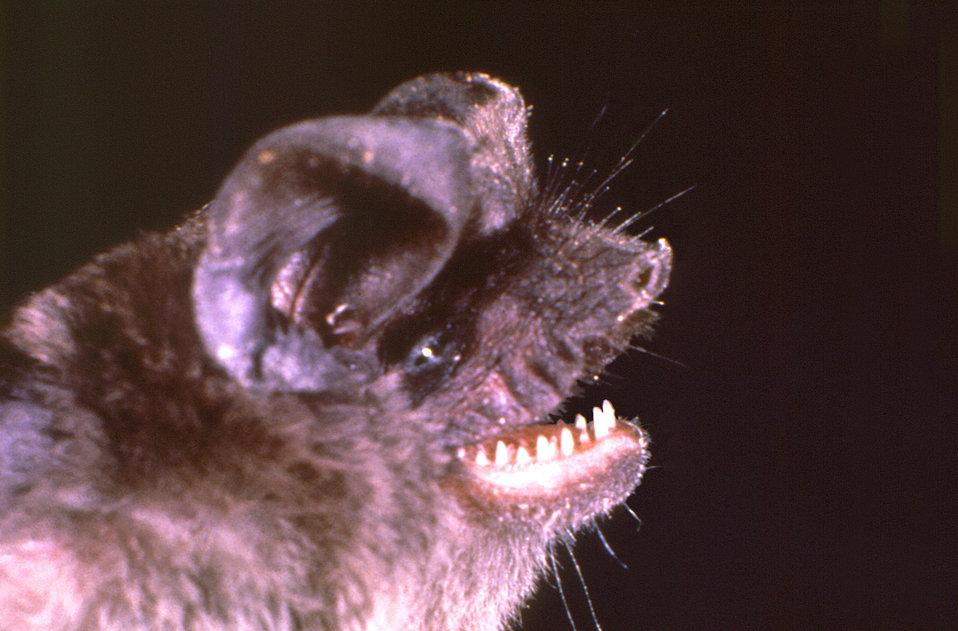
This monochromatic image depicts a right lateral (side) view of a Jamaican fruit bat's, Artibeus jamaicensis, head region.